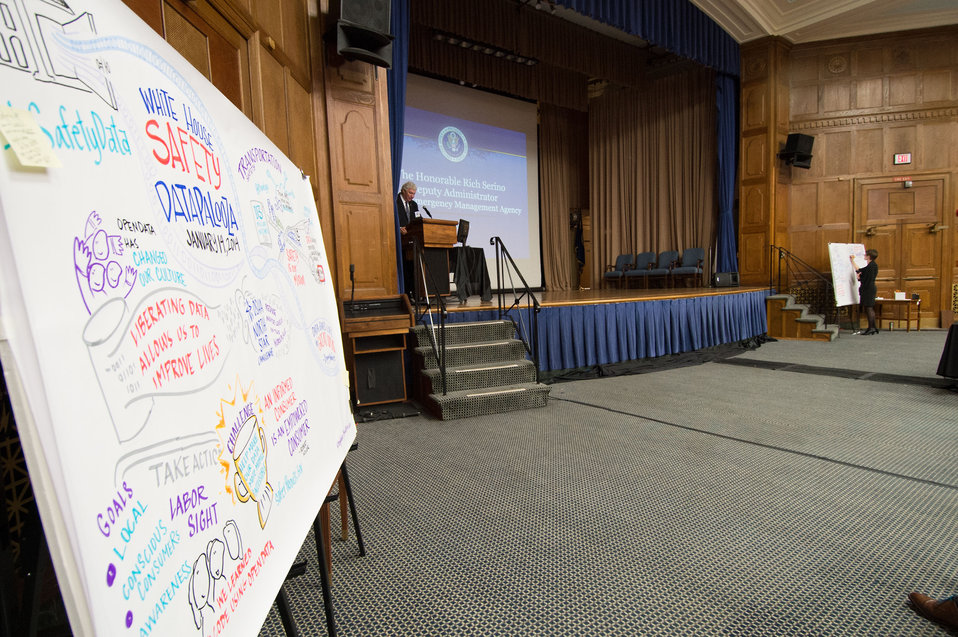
Federal Emergency Management Agency (FEMA) Deputy Administrator Rich Serino speaks at the second annual “Safety Datapalooza,” in the Jefferson Auditorium at USDA in Washington, D.C. on Tuesday, Jan. 14, 2014. The “Safety Datapalooza,” highlights innovators from the private, nonprofit, and academic sectors who have used freely available government data to build products, services, and apps that advance public safety in creative and powerful ways. This year’s meeting features new safety data resources in the areas of transportation, food, occupational and consumer product safety tools to improve disaster preparedness and emergency response.